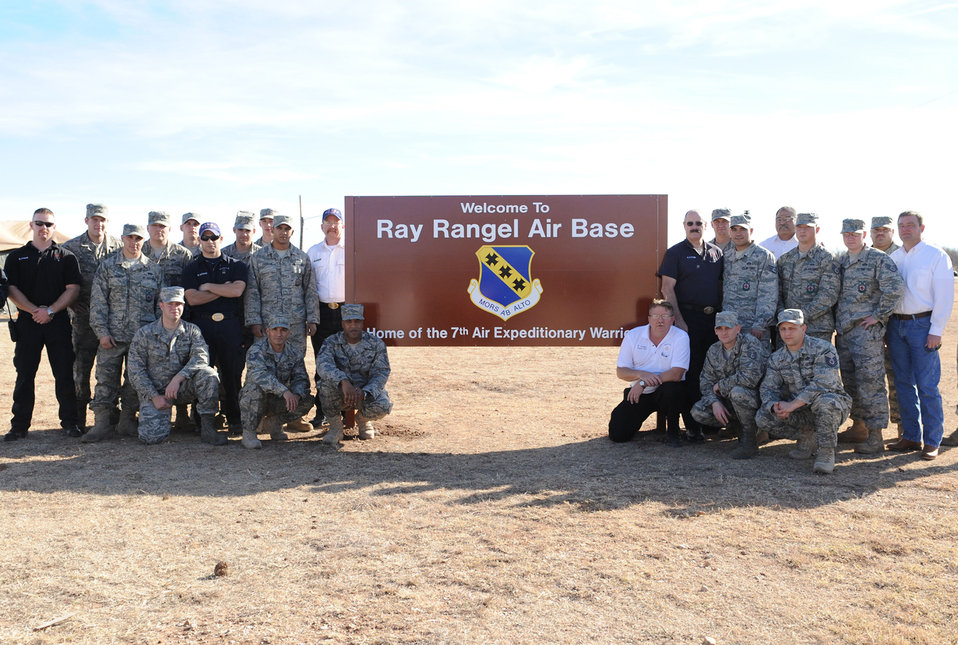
Dyess cantonment honors Airman

Firefighters pose by a new sign honoring one of Dyess Air Force Base's fallen Airmen at the cantonment area Dec. 14, 2010, at Dyess AFB, Texas. The cantonment area, used to host exercises and training sessions, has been renamed in honor of Staff Sgt. Ray Rangel, a 7th Civil Engineer firefighter who lost his life Feb. 13, 2005, at the age of 29, while on a rescue mission in Balad, Iraq.